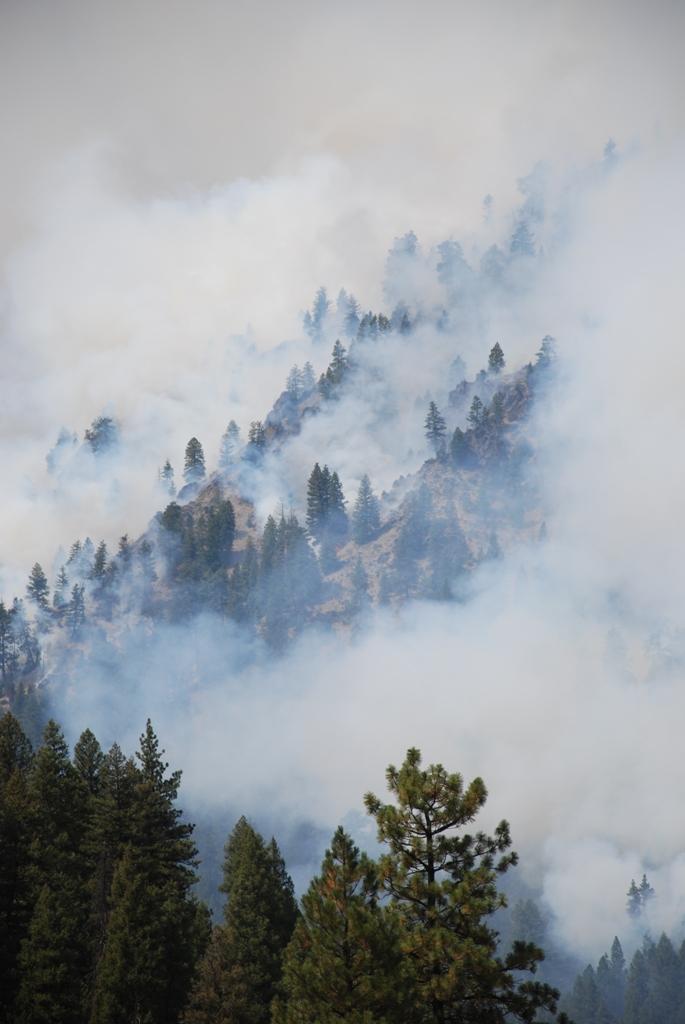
The Little Queens Fire in Boise National Forest near Atlanta, ID began on Aug. 17, 2013 is under investigation. The fire has consumed approximately 20,956 acres and is 10% contained.